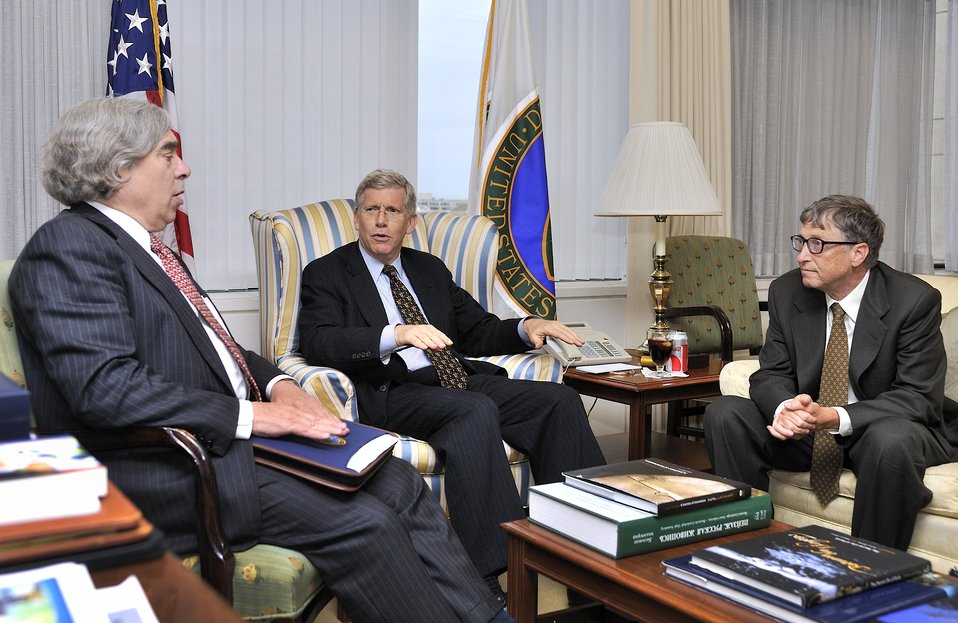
Ken Shipp/DOE Photo